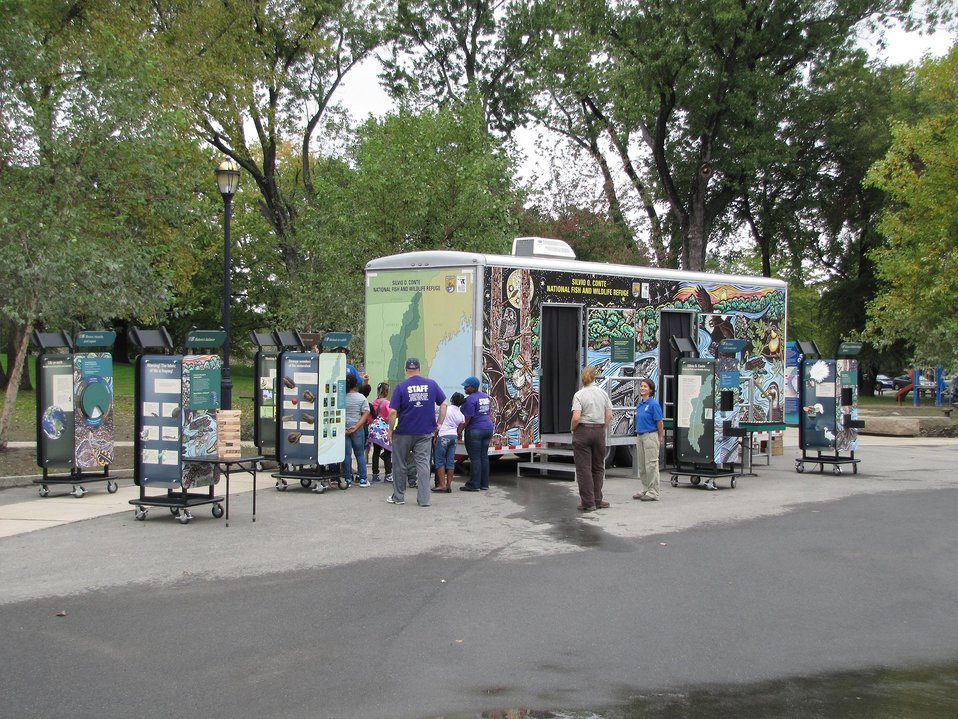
WoW Express in Hartford